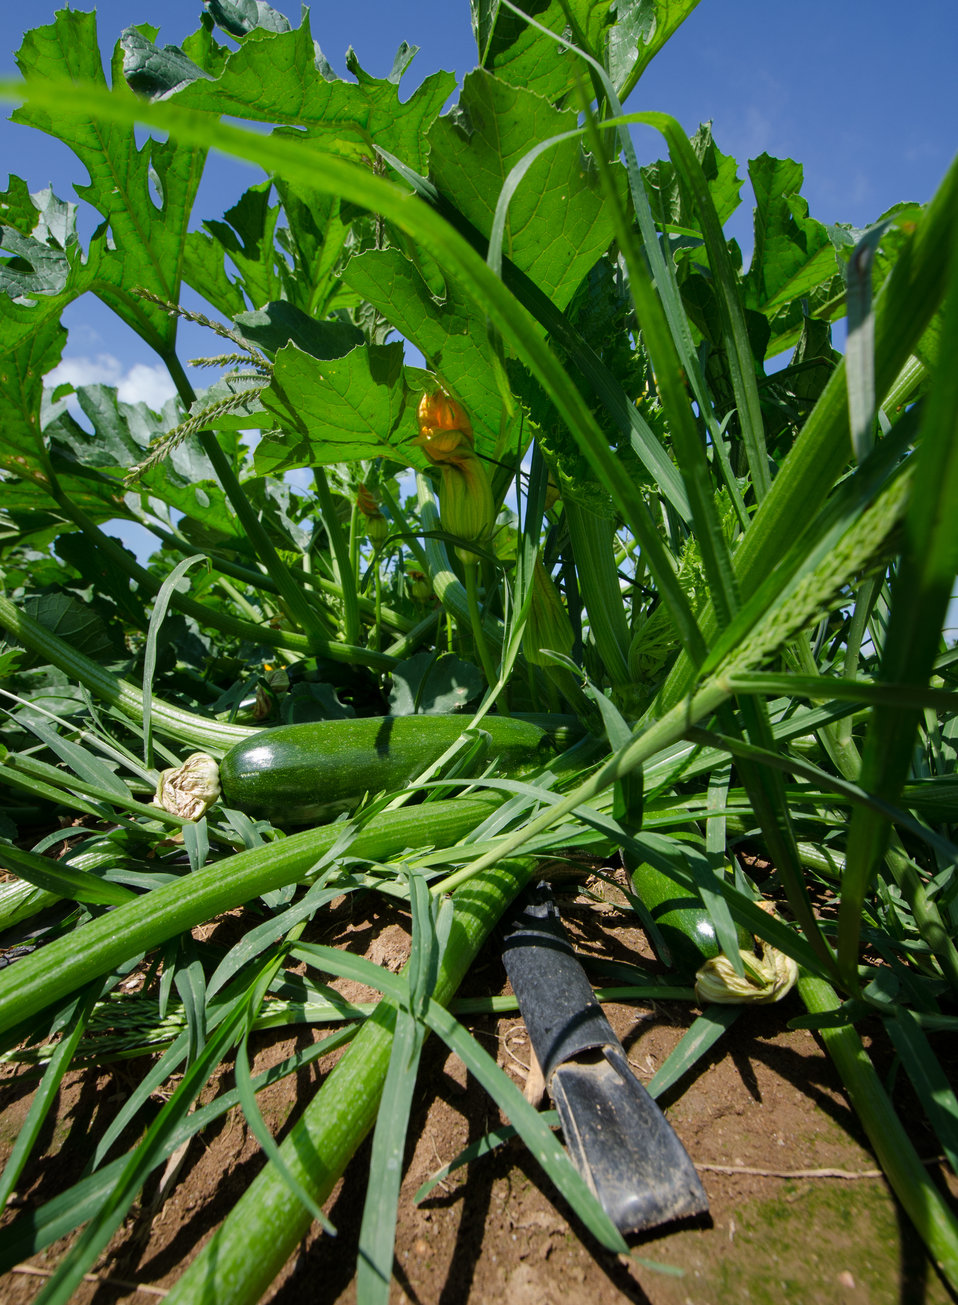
Kirby Farms third-generation family farm in Mechanicsville, VA, uses micro irrigation (drip watering) and plastic mulch (row covering) to efficiently grow green zucchini squash, on Friday, Sept 20, 2013. Water is pumped through a filtration/regulator system to flexible distribution pipes and hard connectors. Emitter hoses can be driven in where needed. Pressurized hoses emit water at a very slow rate near the base of the plants. Computers or timers provide additional controls. A micro irrigation system, also known as drip or trickle irrigation, is used to water directly to the plant root zone utilizing surface or subsurface applicators. For more information please see www.nrcs.usda.gov/Internet/FSE DOCUMENTS/nrcs141p2 024038...
Plastic sheeting is a form of mulch. It conserves soil moisture and reduces energy
use associated with irrigation, moderates soil temperature, provide erosion control, suppresses weed growth, facilitates the establishment of vegetative cover, improves soil quality, and reduces airborne particulates.